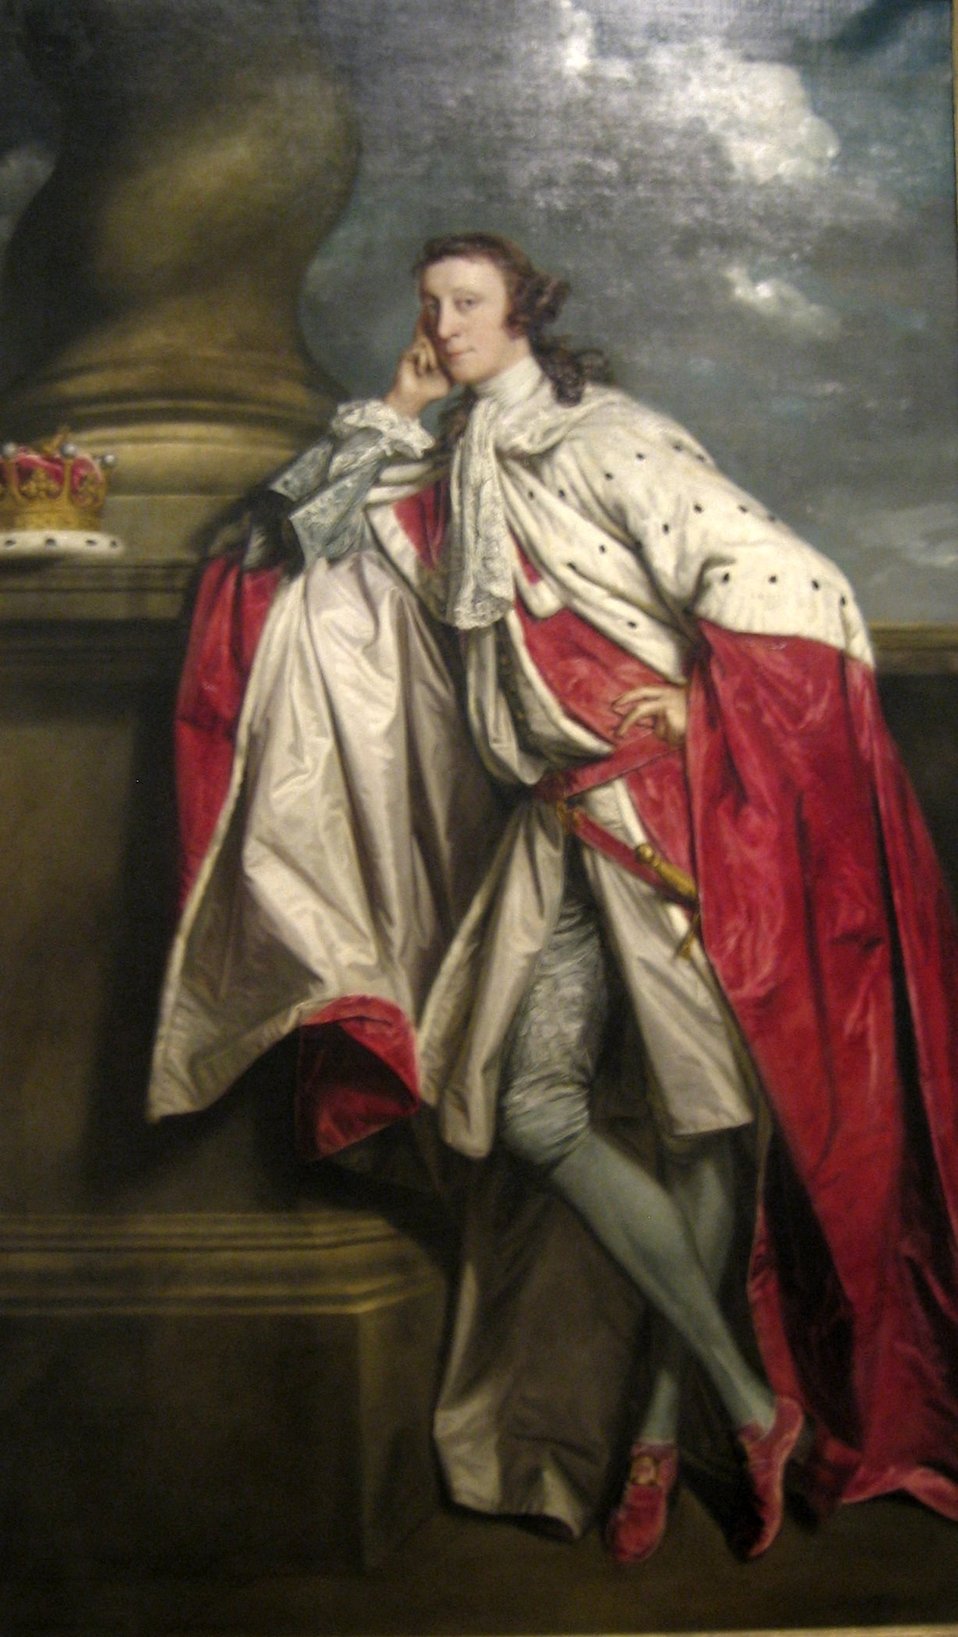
'James Maitland, 7th Earl of Lauderdale', oil on canvas painting by Sir Joshua Reynolds, c. 1790, Art Gallery of New South Wales